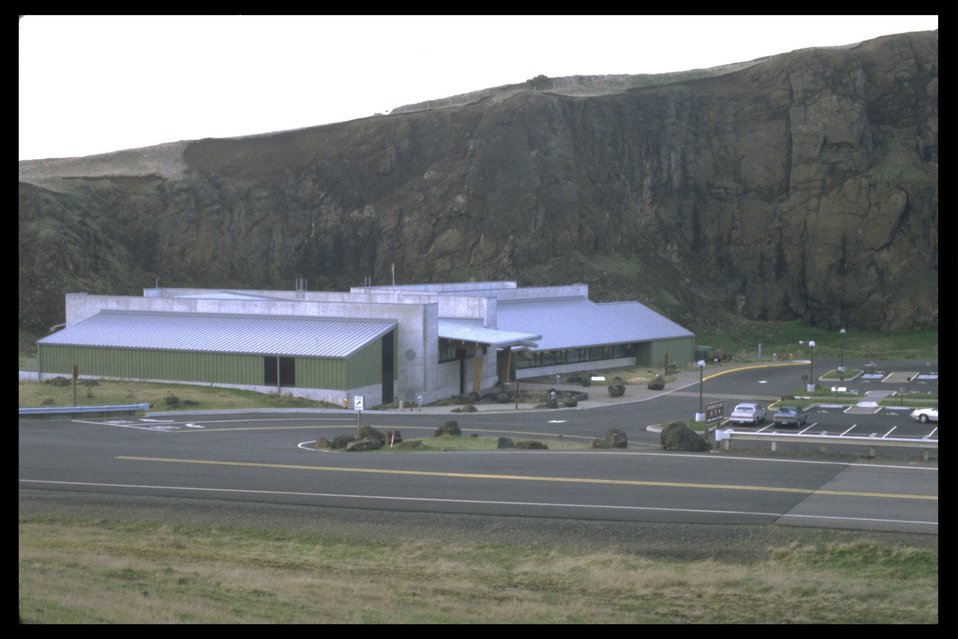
External view of the Interpretive Center.